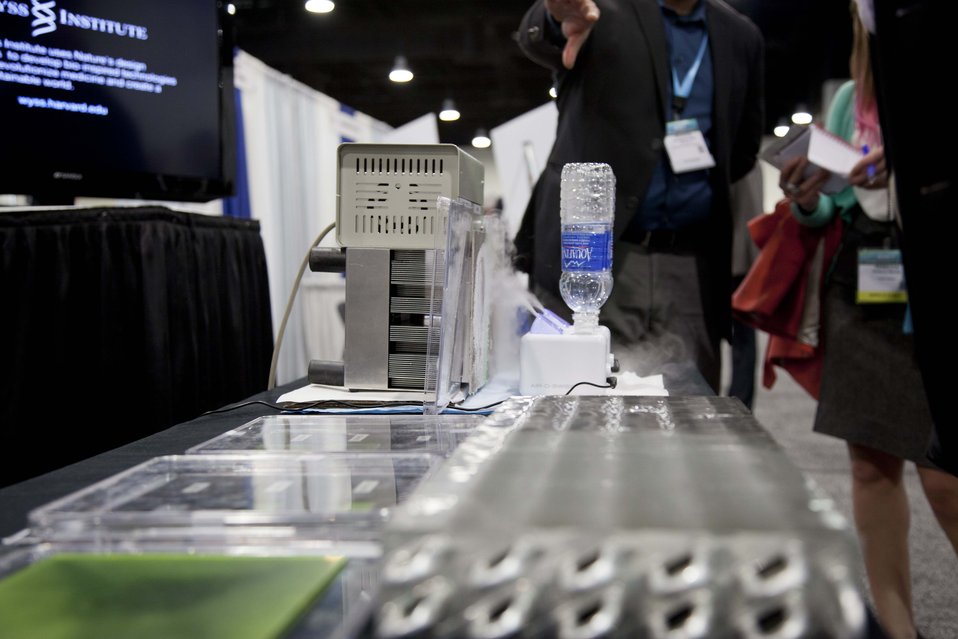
Researchers at Harvard's Wyss Insitute showcase a slippery coating that could improve the efficiency of a number of applications -- from wastewater treatment systems to marine shipping vessels. One application that shows particular promise is refrigeration equipment. Researchers demonstrate how their coating prevents frost from forming on metal. When applied to fridge coils, the coating could help reduce the need to defrost, resulting in energy savings.